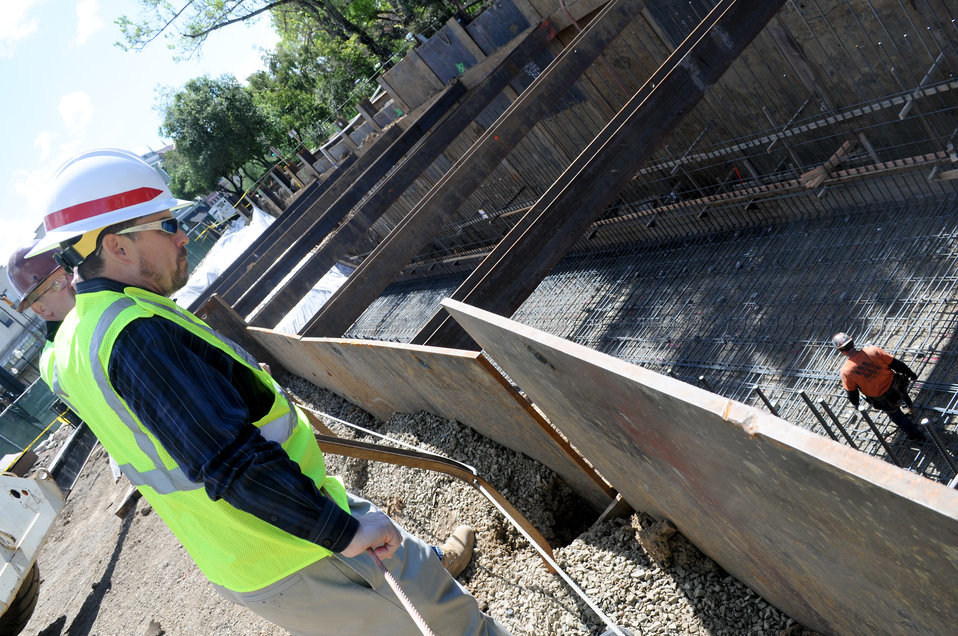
Reducing flood risk in Napa, Calif.

U.S. Army Corps of Engineers Sacramento District project manager Dave Cook (center) and ProVen Management Inc. superintendant Patrick Feeney (behind, left) oversee construction April 8, 2011 of two double-barrel box culverts in Napa, Calif. The Sacramento District is installing the culverts as part of a project to reduce the risk of flooding from nearby Napa Creek. ProVen Management is the contractor building the culverts.
“These box culverts will give the creek a straight shot out towards the river,” Cook said. In high water, Napa Creek often overtops and spills into adjacent neighborhoods, causing persistent flooding. The culverts will direct flood waters more quickly to the river and away from homes and businesses. The $14.8 million project, funded by the American Recovery and Reinvestment Act of 2009, is a joint effort of the Corps, the city of Napa, and the Napa Flood Control and Water Conservation District, to reduce flood risk for the city.